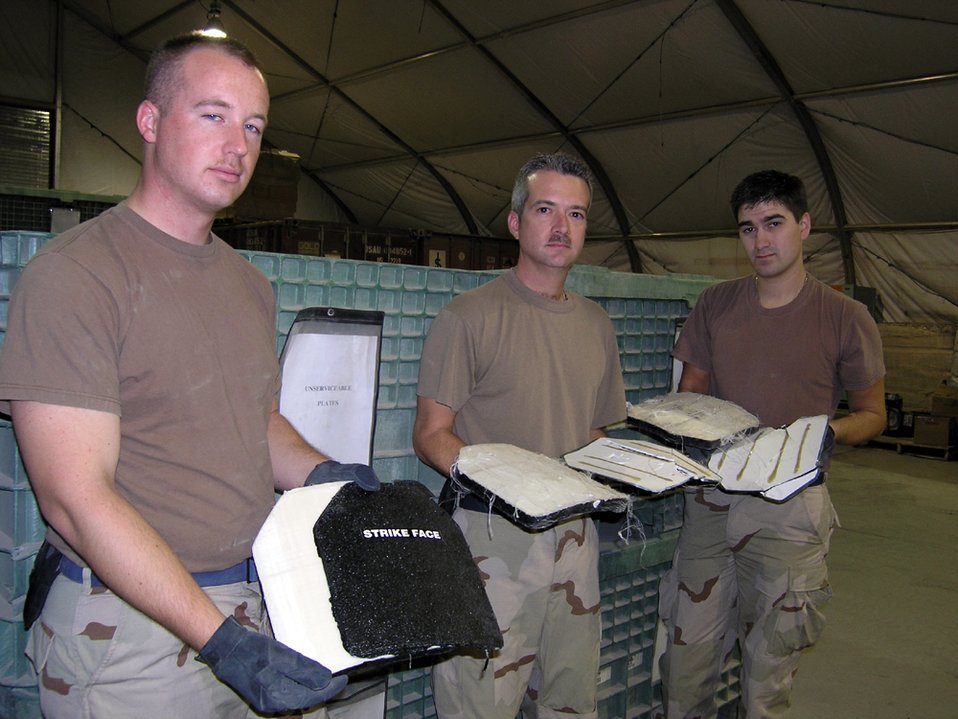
Protecting body armor

ALI BASE, Iraq -- (From left) Senior Airman Josh Warren, Master Sgt. Steve Strange and Senior Airman Caslon Smith hold damaged plates that were removed from body armor vests. Much of the armor is unusable because it was mishandled. The Airmen are assigned to the 407th Expeditionary Logistics Readiness Squadron here.